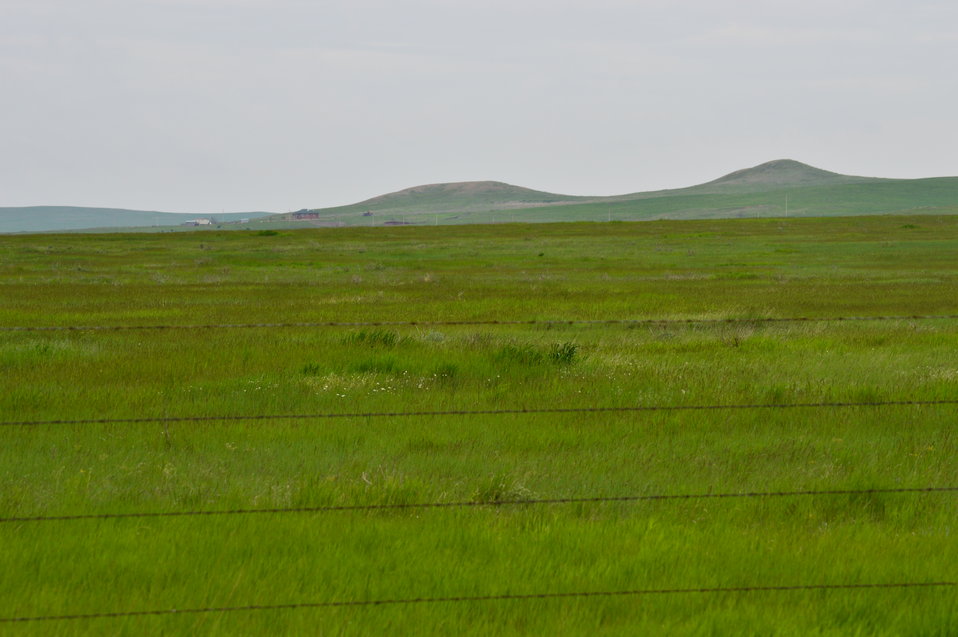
Prairie

Scenery and wildlife at Lake Ilo National Wildlife Refuge in North Dakota